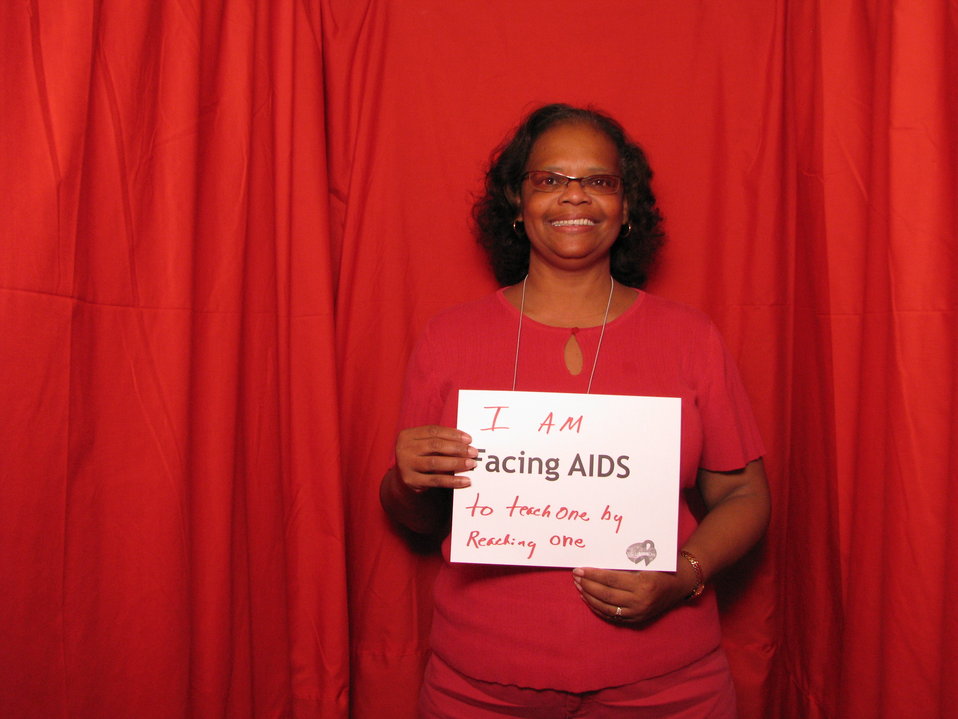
I AM FACING AIDS to teach one by reaching one.

From the AIDS.gov photo booth at the U.S. Conference on AIDS, September 2010 (Orlando, FL).